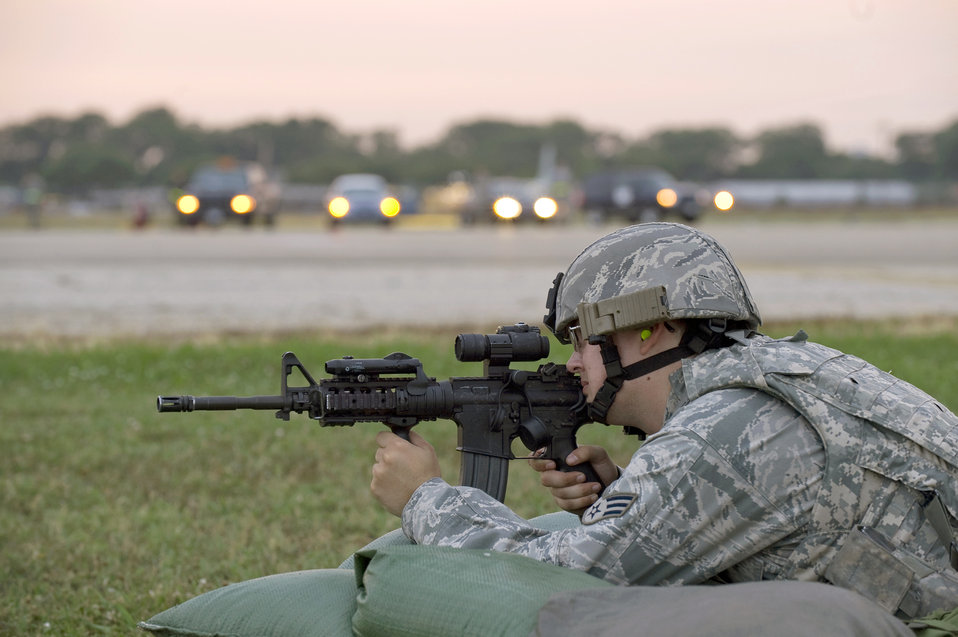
I've got it covered

Senior Airman Jason Lilly, 2nd Security Forces Squadron, provides security for the airfield during a nuclear operational readiness exercise June 10, 2010, at Barksdale Air Force Base, La. The exercise is being held to prepare Barksdale Airmen for the upcoming nuclear operational readiness inspection.